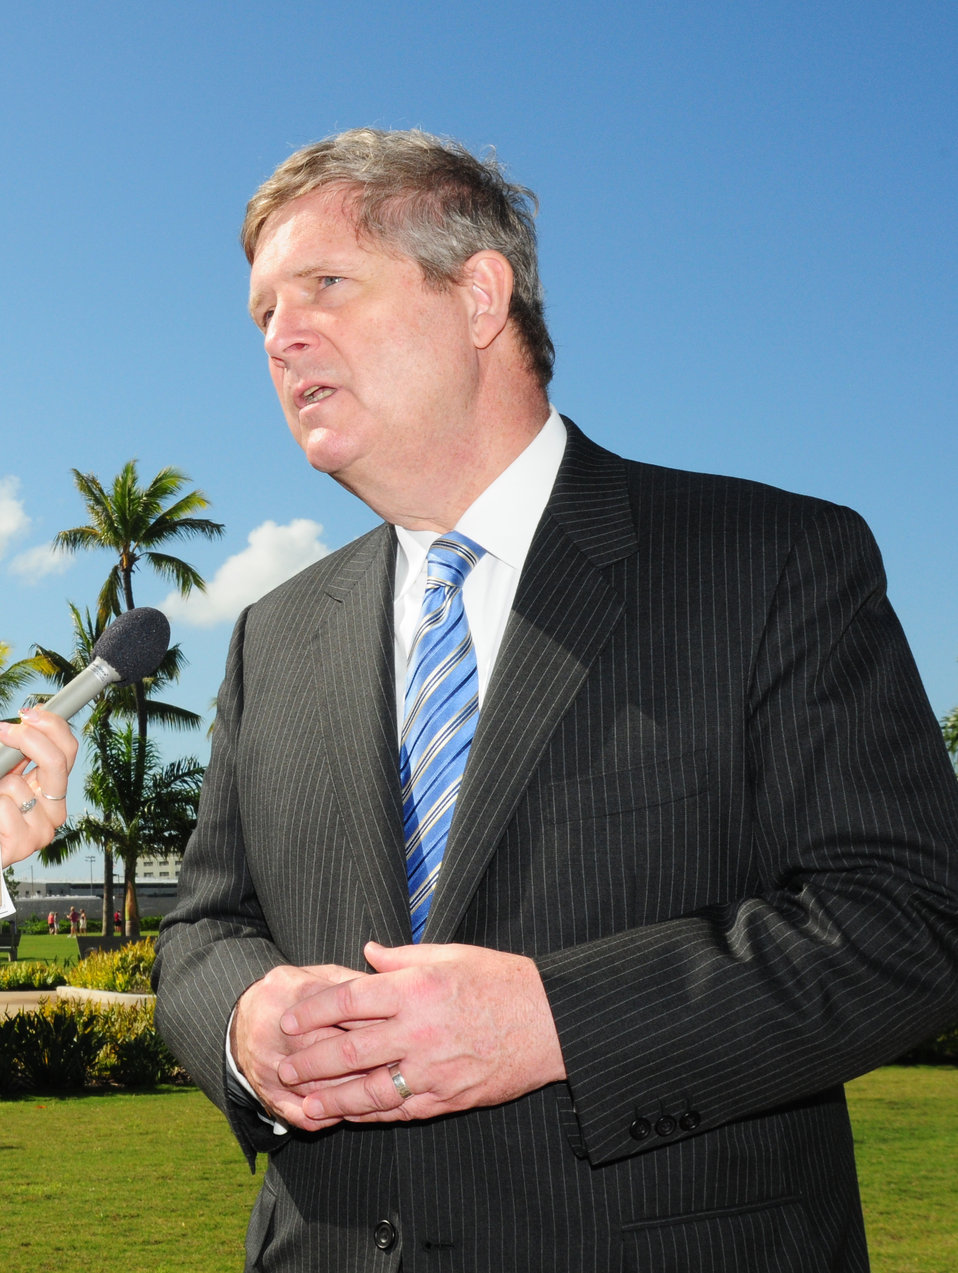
Agriculture Secretary Tom Vilsack is interviewed by Hawaii Public Radio Reporter Nikki Motson (not seen) following Vilsack's talk at the World War II Valor in the Pacific National Monument's Pearl Harbor Visitor Center where he highlighted the Obama Administration's commitment to renewable energy. Pearl Harbor naval base was the first Hawaii military marine fleet to use biodiesel, replacing the Department of Navy-operated tour boats that shuttled visitors to and from the USS Arizona Memorial with five new boats capable of running on 100% biodiesel. Near Honolulu, HI, on Tuesday, January 10, 2012.